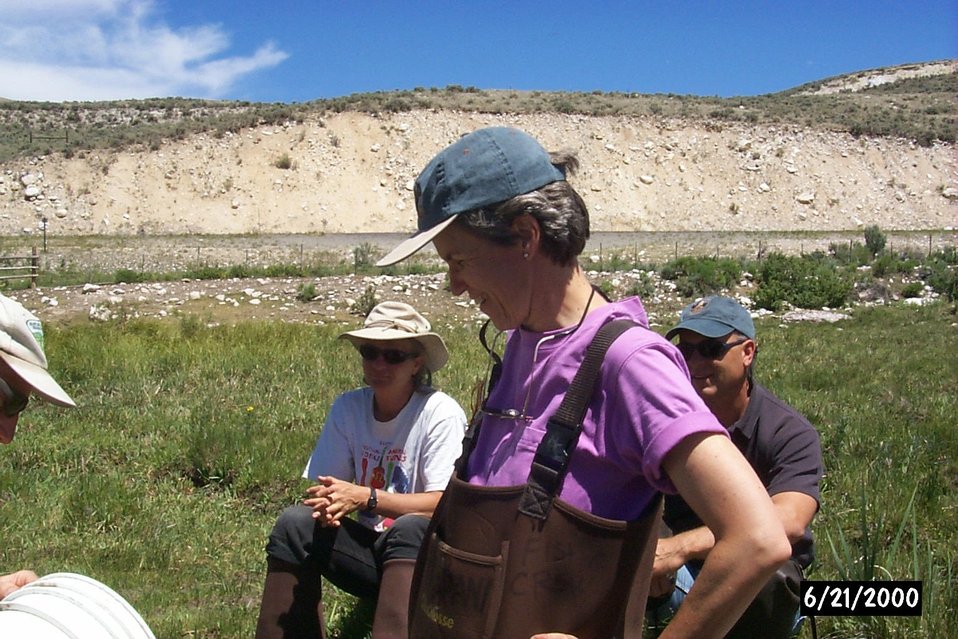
People Salmon Field Office UCSC Upper Columbia Salmon Clearwater District